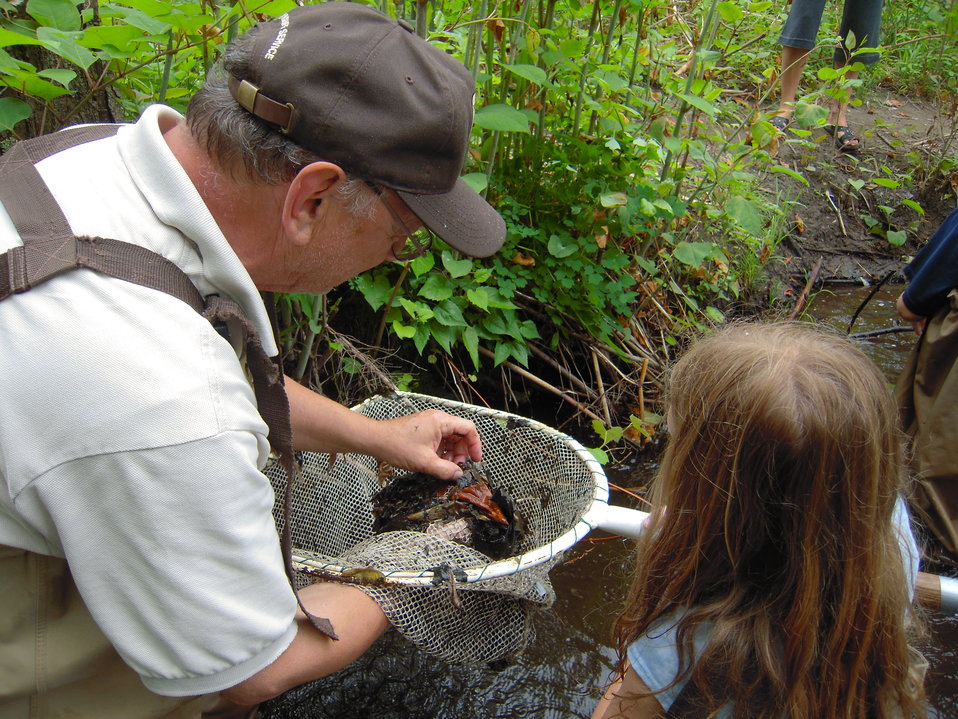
Studying their findings